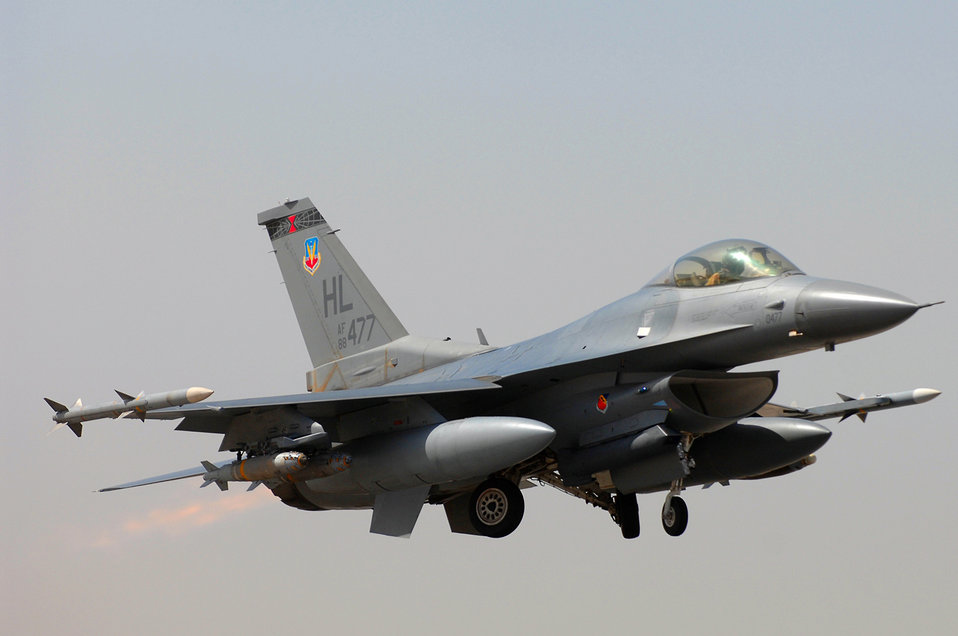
F-16s scrambled

Two F-16 Fighting Falcons, like the one shown here, were scrambled Jan. 8, 2010, to respond to an incident occurring on a commercial airliner. The airliner landed safely where it was met by law enforcement officials.